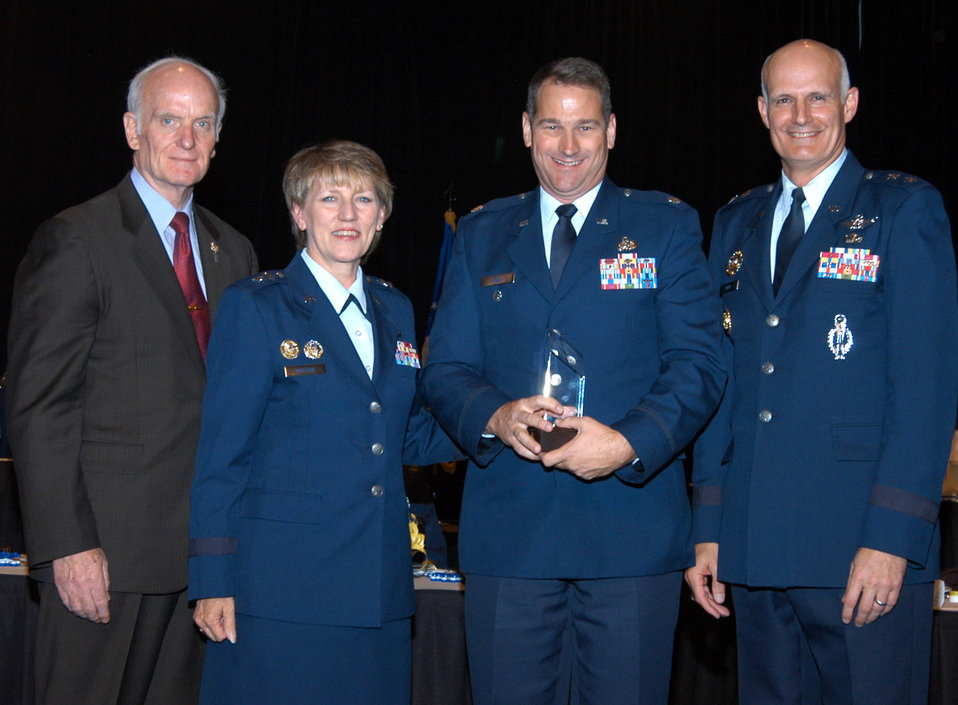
AF holds first manpower, personnel, services worldwide conference

Mr. Art Myers, Air Force Services director, Maj. Gen. K.C. McClain, Air Force Personnel Center commander, and Maj. Gen. Roger W. Burg, 20th Air Force commander, stand with Lt. Col. Stephen Dale, winner of the Gen. Michael P.C. Carns Services Award at the 2008 Manpower, Personnel and Services Worldwide Conference in Keystone, Colo., June 8-14.